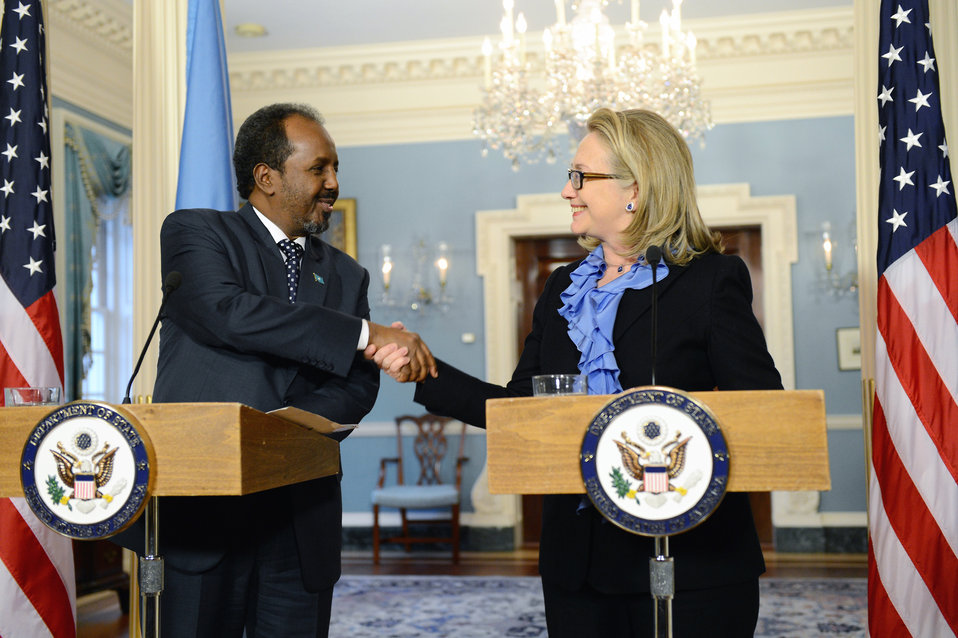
Secretary Clinton Delivers Remarks With Somali President Hassan Sheikh

U.S. Secretary of State Hillary Rodham Clinton delivers remarks with Somali President Hassan Sheikh Mohamud at the U.S. Department of State in Washington, D.C. on January 17, 2013.